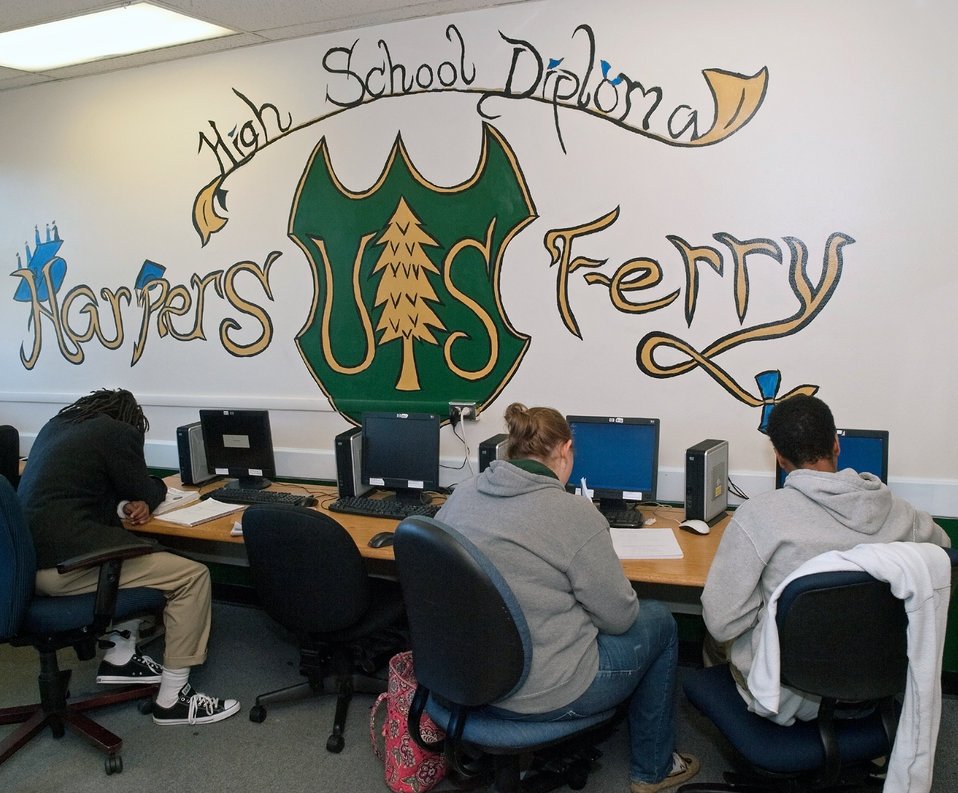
Students prepare for their high school equivalency exams at the Job Civilian Conservation Corp Center (JCCCC) in Harpers Ferry, WV on Nov. 8, 2012. The U.S. Forest Service manages 28 Job Corps Civilian Conservation Centers.